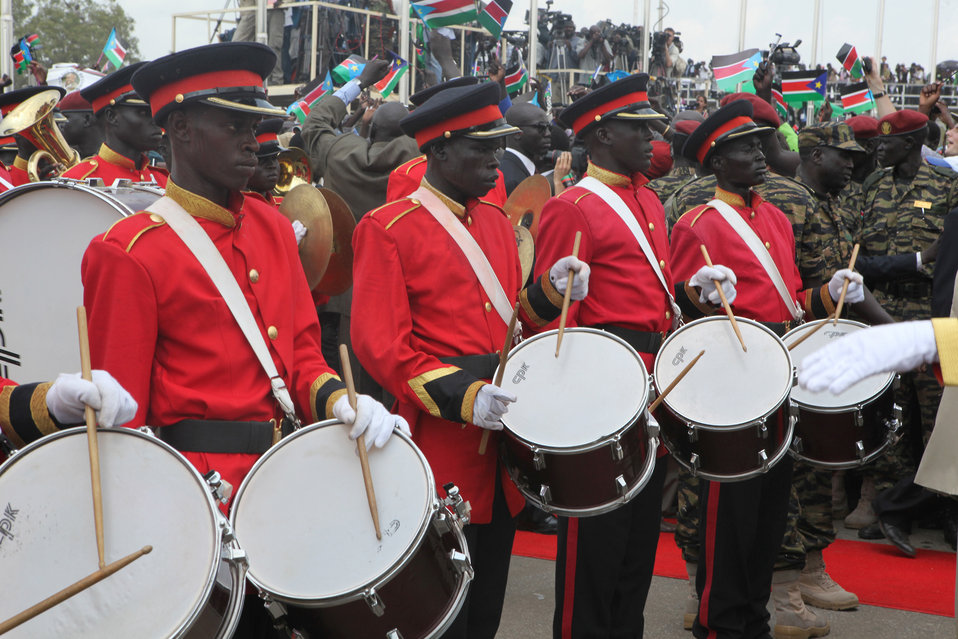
South Sudan Independence Day

Official marching band of the new Republic of South Sudan performs for Independence Day celebrations in Juba, South Sudan on July 9, 2011.